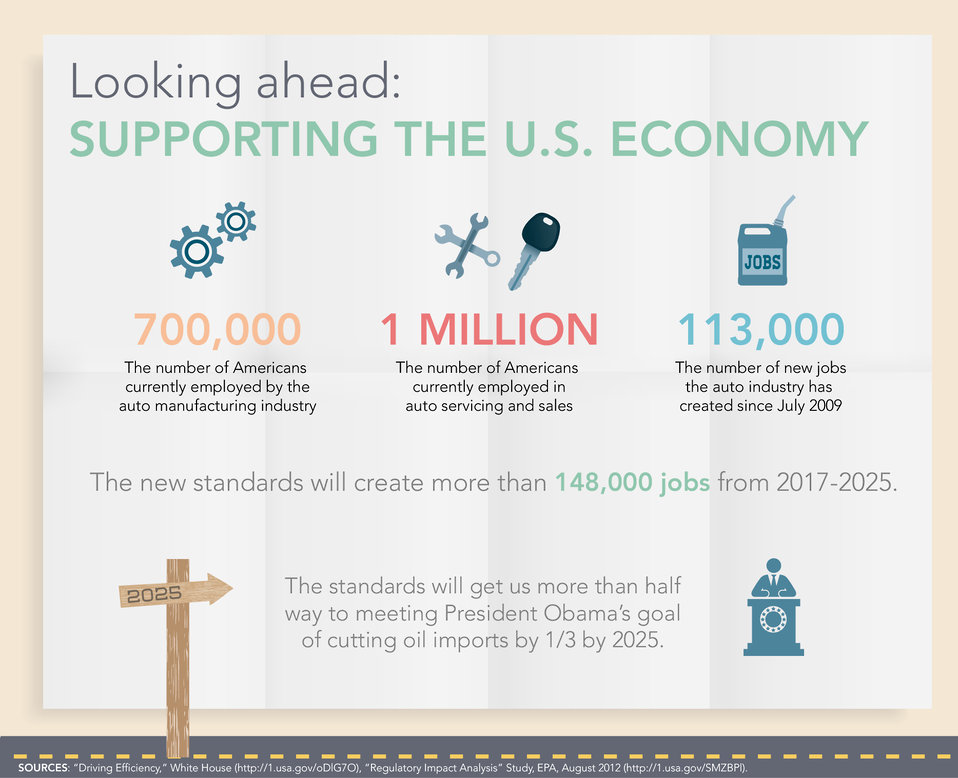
Infographic: The Road to Fuel Efficiency

Slide 4